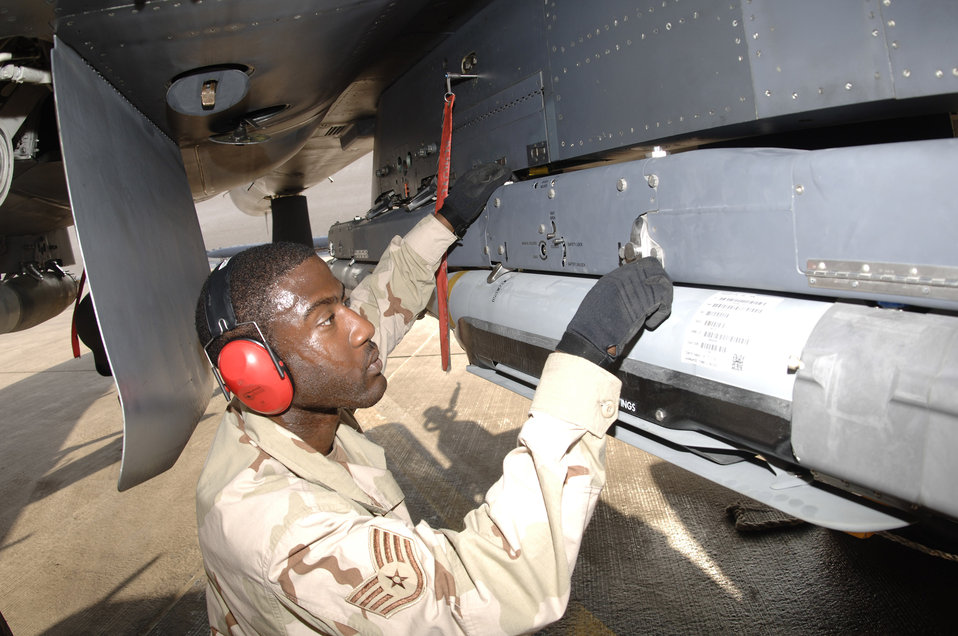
Small diameter bomb makes combat debut

Staff Sgt. Kevin Harvey secures a weapons carriage with GBU-39/B small diameter bombs to an F-15E Strike Eagle. Sergeant Harvey is assigned to the 379th Expeditionary Aircraft Maintenance Squadron. He is deployed from Royal Air Force Lakenheath, England, in support of Operation Iraqi Freedom.